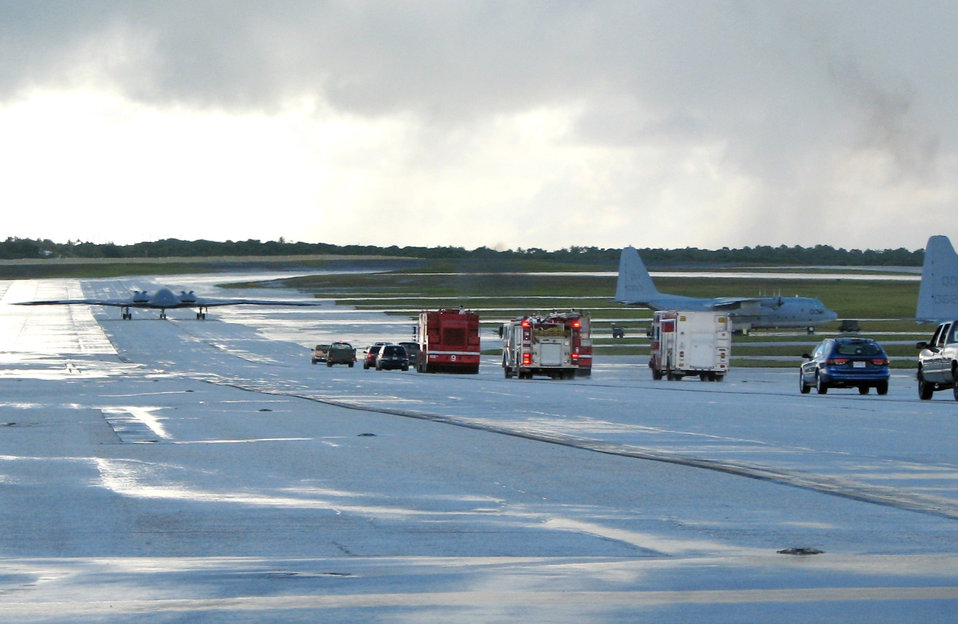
Whiteman B-2s complete successful Andersen deployment

A line of vehicles follows a B-2 Spirit as it taxis on the flightline at Andersen Air Force Base, Guam, before departing on a training mission Aug. 24. The